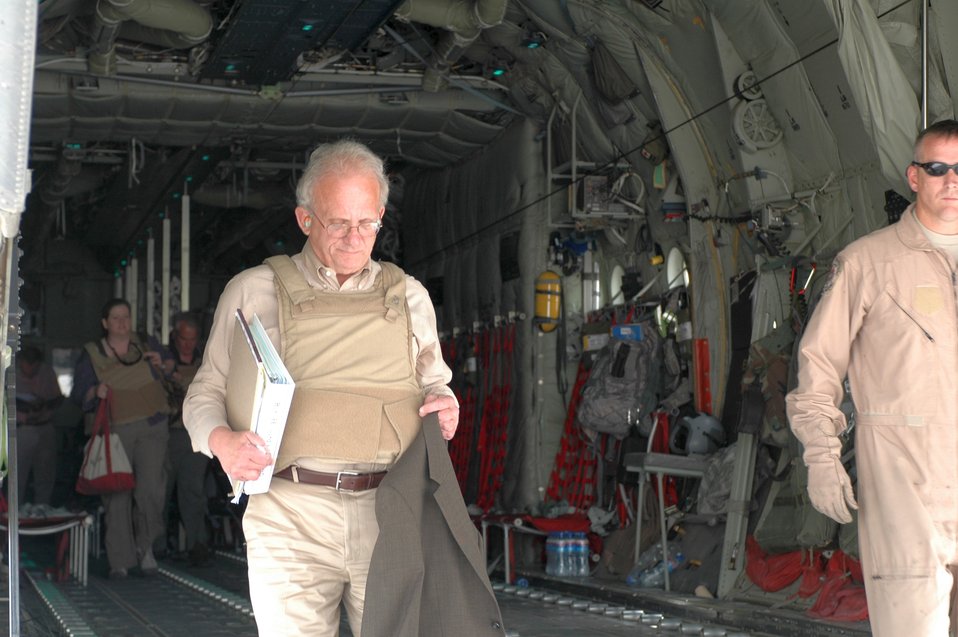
CODEL Berman